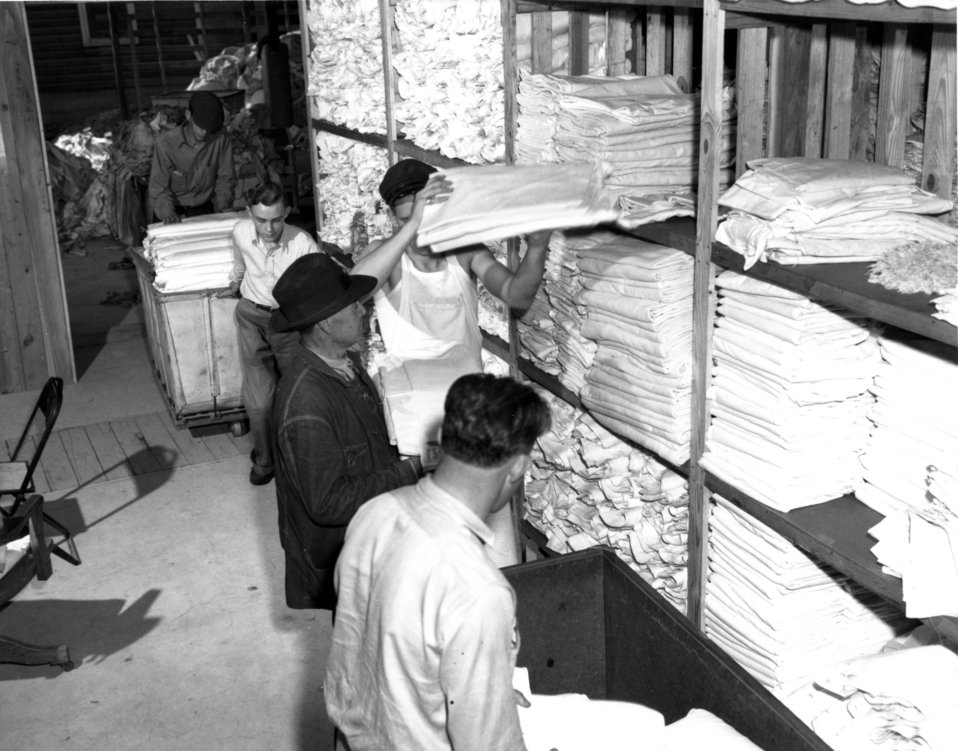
Housing at Oak Ridge